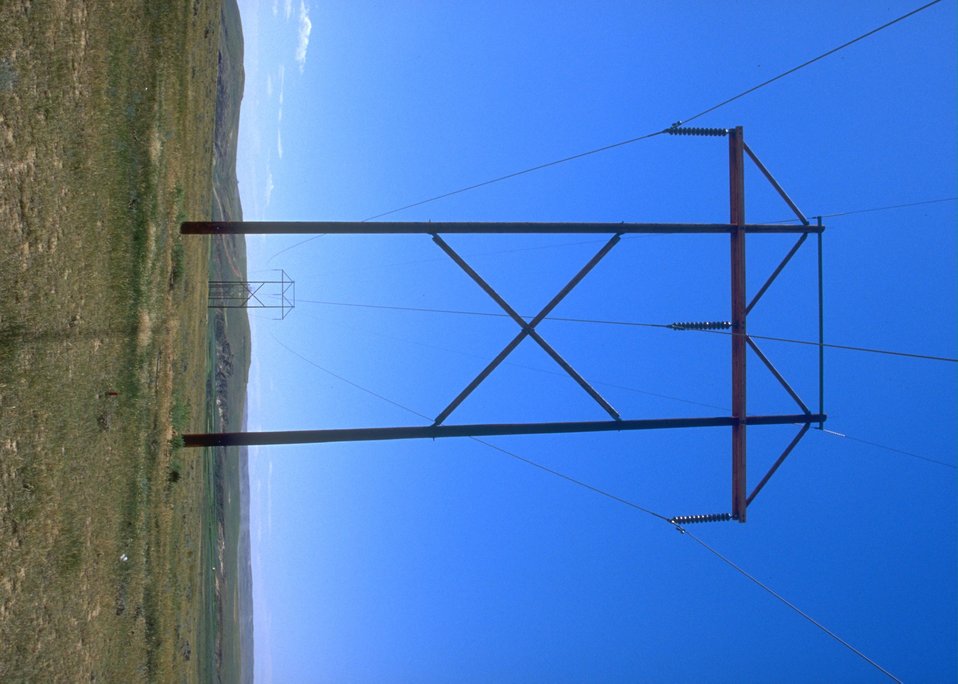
ROW's - Electric power south of Gillette, WY.